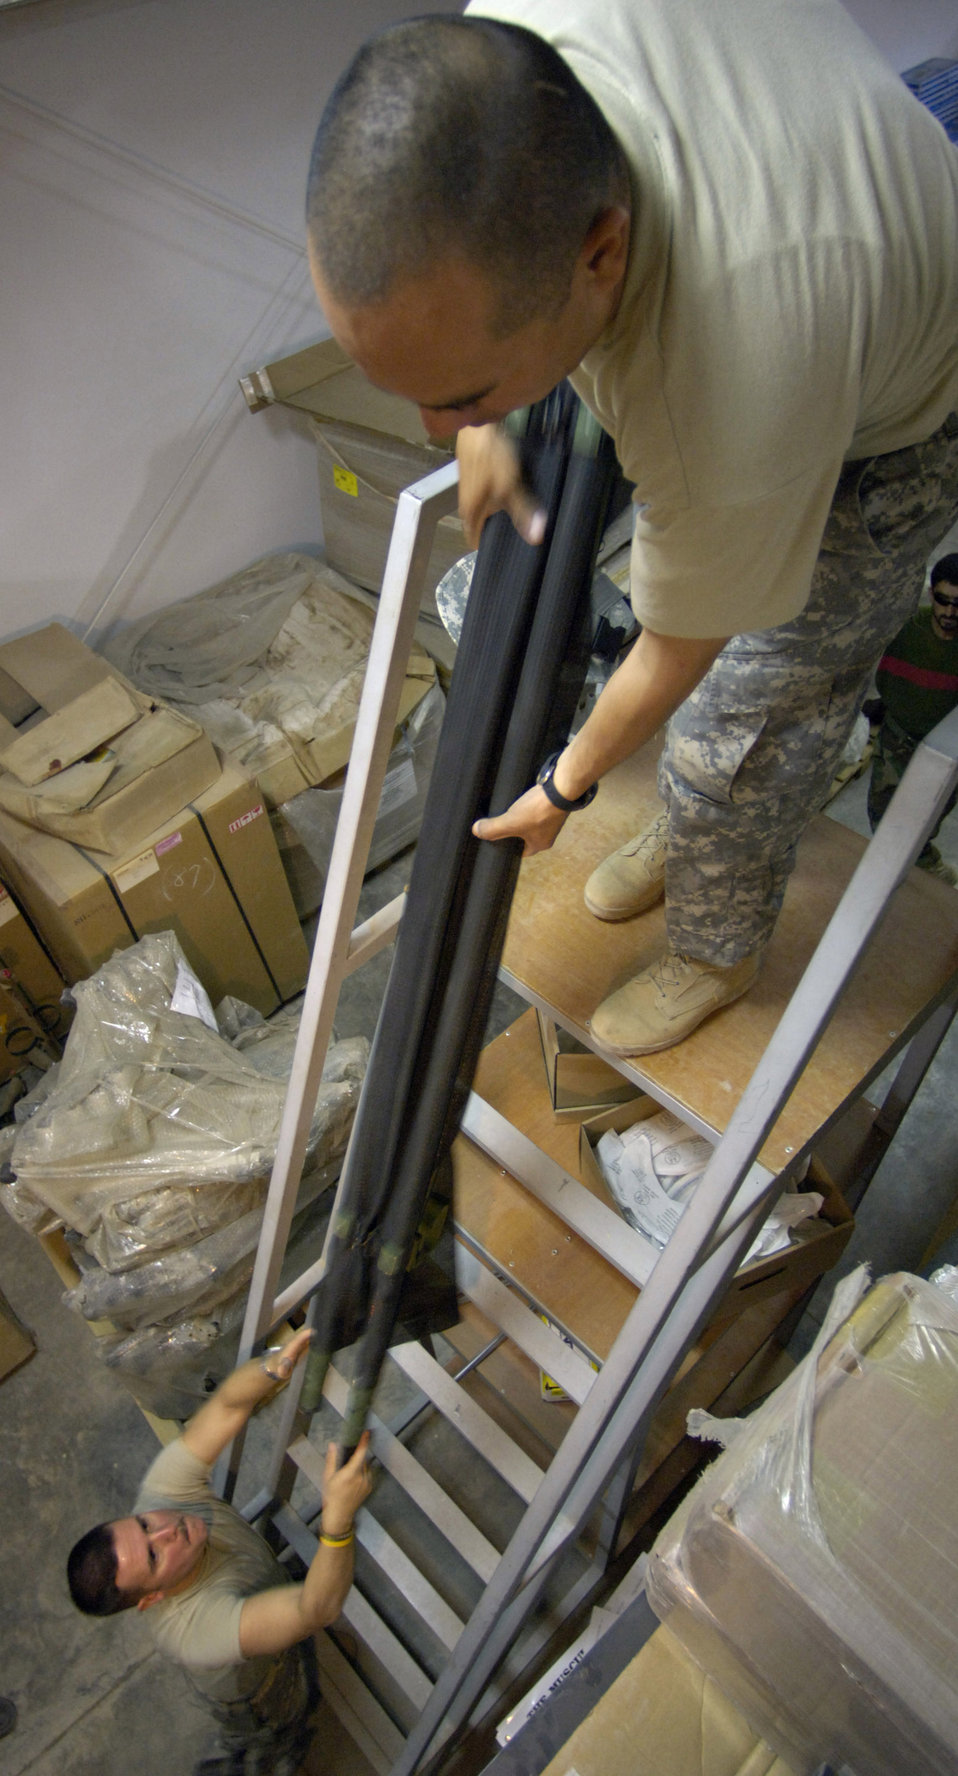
Airmen mentorship helps develop Afghan hospital

Master Sgt. Doug Suddueth (bottom left) and Army Sgt. 1st Class Antonio Rivas move a load of medical equipment to a truck Aug. 18 in Afghanistan. The medical equipment is being to a new $6.5 million, 50-bed hospital on the Afghan national army Hero Camp near Kandahar Airfield in southern Afghanistan. Sergeant Suddueth is deployed from Maxwell Air Force Base, Ala. Sergeant Rivas is deployed form Fort Sam Houston, Texas. They are medical logistics technicians and Afghan national army mentors assigned to the Combined Security Transition Command-Afghanistan on Camp Eggers in Kabul, Afghanistan.